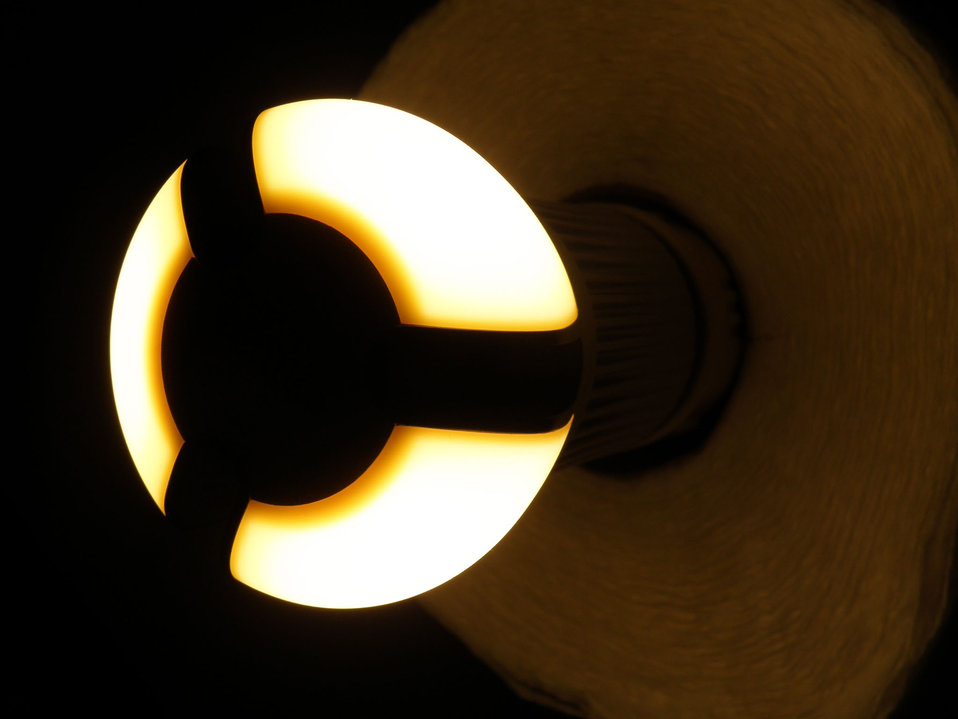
New research from Pacific Northwest National Laboratory indicates light-emitting diode light bulbs, an example of which is shown here, are more environmentally friendly than compact fluorescent and incandescent lights.